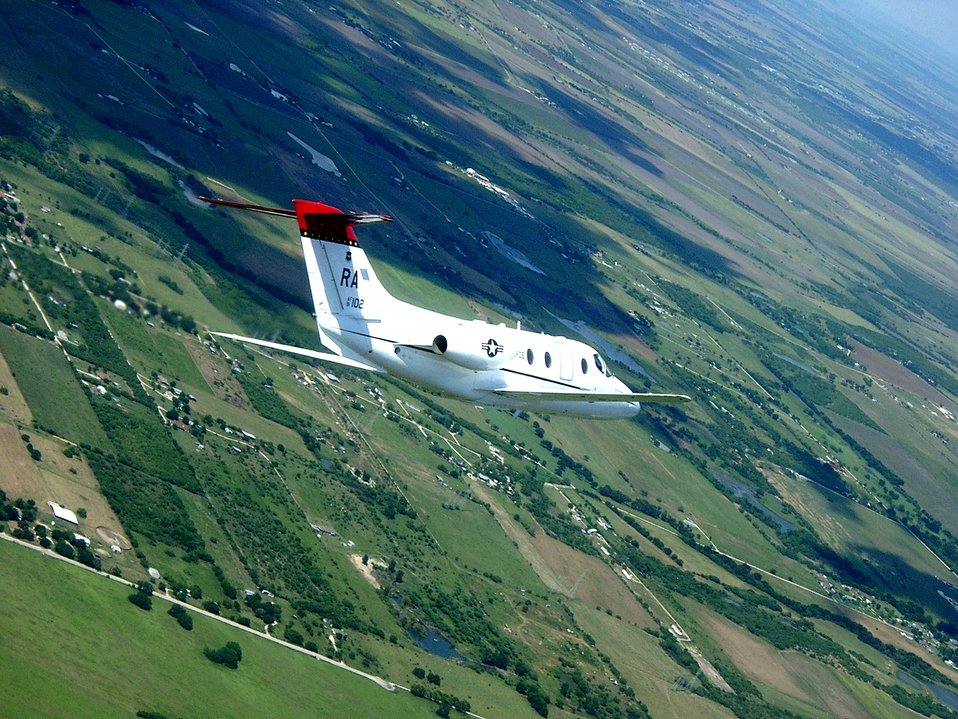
T-1A Jayhawk

A T-1A Jayhawk on a training mission near Randolph Air Force Base, Texas